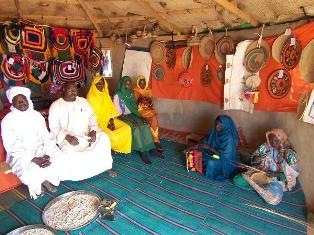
Arts and crafts created by refugees are displayed in Touloum Camp in eastern Chad on March 25, 2007. In fiscal year 2010, two principal factors drove PRM’s development of a humanitarian strategy for Chad and the region. The first was security. Despite the presence of UN peacekeepers in Chad, both civilians and humanitarian workers have been subjected to an increasing level of banditry: robbery, carjackings, and at times even kidnapping and murder. Now the Chadian government has asked the UN mission to leave the country, an event that would further expose humanitarians and refugees to danger. The second factor was eastern Chad’s qualification as a protracted refugee situation, meaning it has been in existence for over five years. Even with some hopeful political steps towards peace in Darfur in early 2010, the refugees will likely remain in Chad for several more years. With lifesaving services well-established in the camps, therefore, PRM has shifted its focus to programs that provide a longer-term benefit, such as education and vocational training.